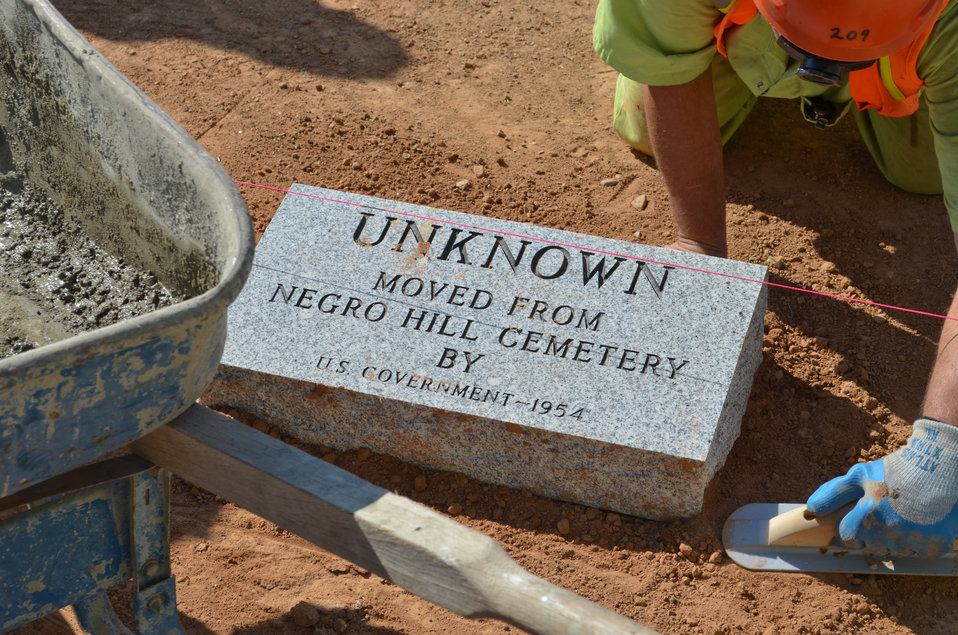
Replacing offensive grave markers at Mormon Island Relocation Cemetery

Folsom Prison inmates working under the California Prison Industry Authority place new grave markers at Mormon Island Relocation Cemetery in El Dorado Hills, Calif., Oct. 19, 2011, replacing original markers that contained an offensive racial epithet. The U.S. Army Corps of Engineers Sacramento District moved the 36 graves from the original Negro Hill Cemetery to the relocation cemetery during the construction of Folsom Dam in 1954, and created the offensive markers. El Dorado County, which manages the cemetery, and the California Prison Industry Authority collaborated on the project to replace the markers.